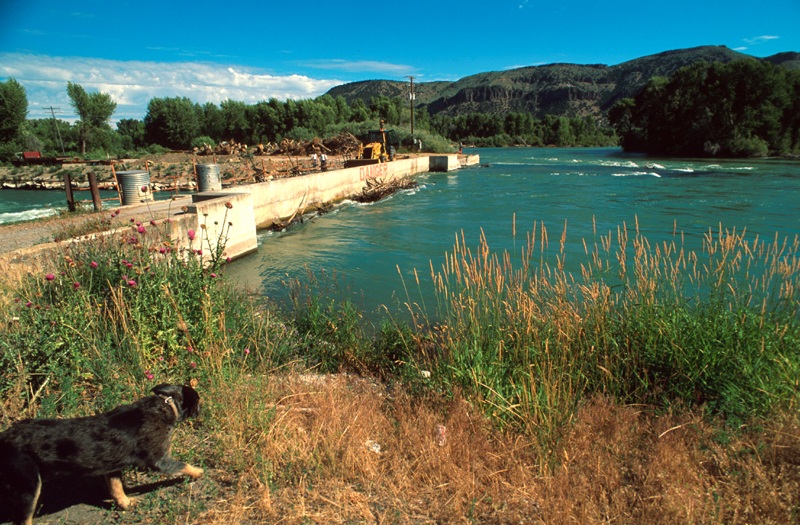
South Fork of the Snake River